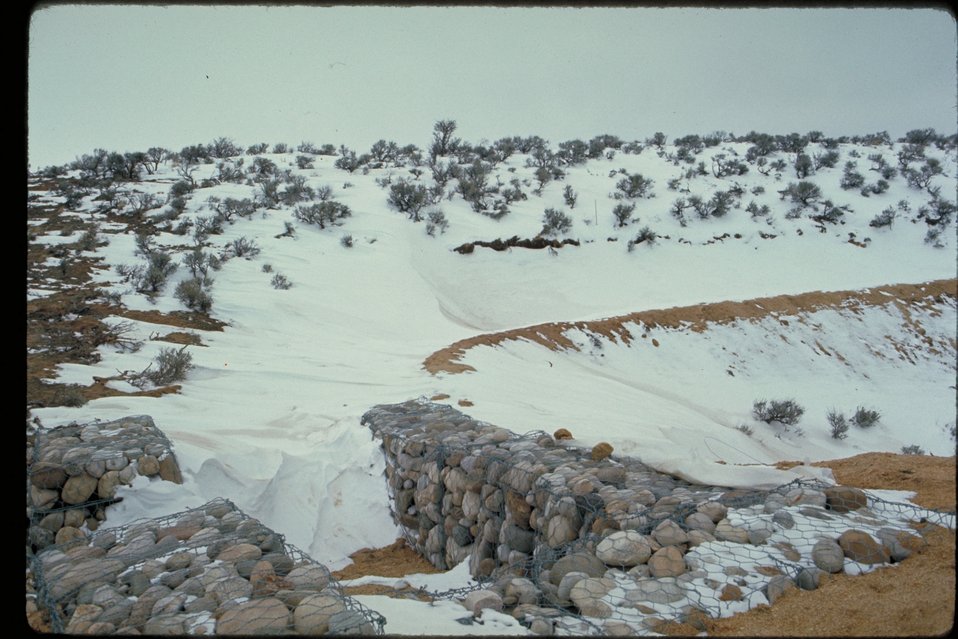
Snow retention diversion trench Boise Front Four Rivers Field Office LSRD Lower Snake River District